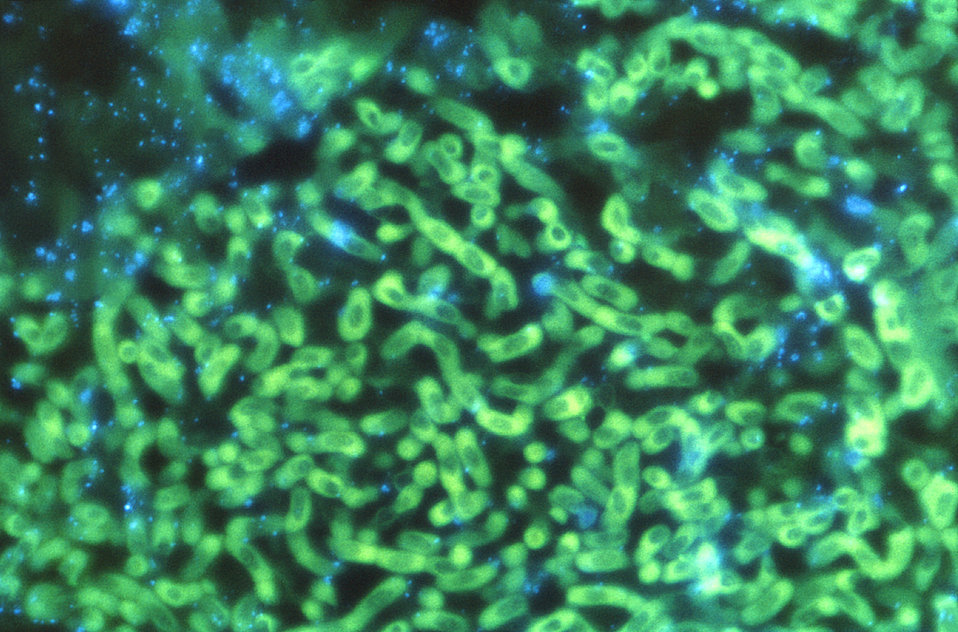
Magnified 562X this photomicrograph, stained using an 'Aspergillus' conjugate fluorescent antibody (FA) staining technique, revealed the presence of Aspergillus sp. organisms, in a case of aspergillosis.What is Aspergillus?